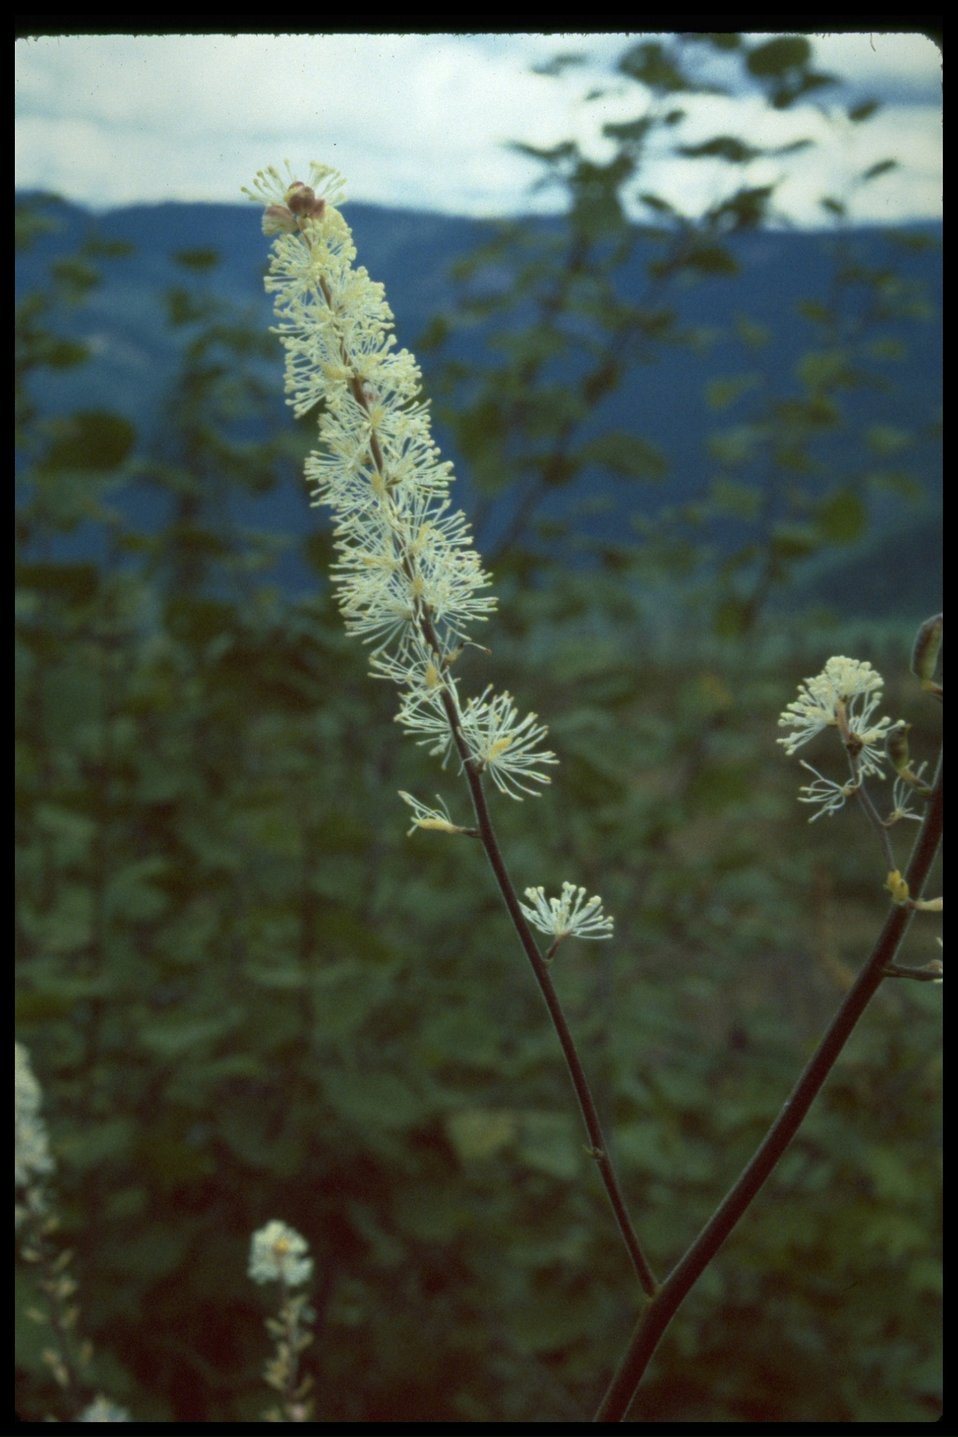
Cimicifuga elata, commonly known as Tall Bugbane.